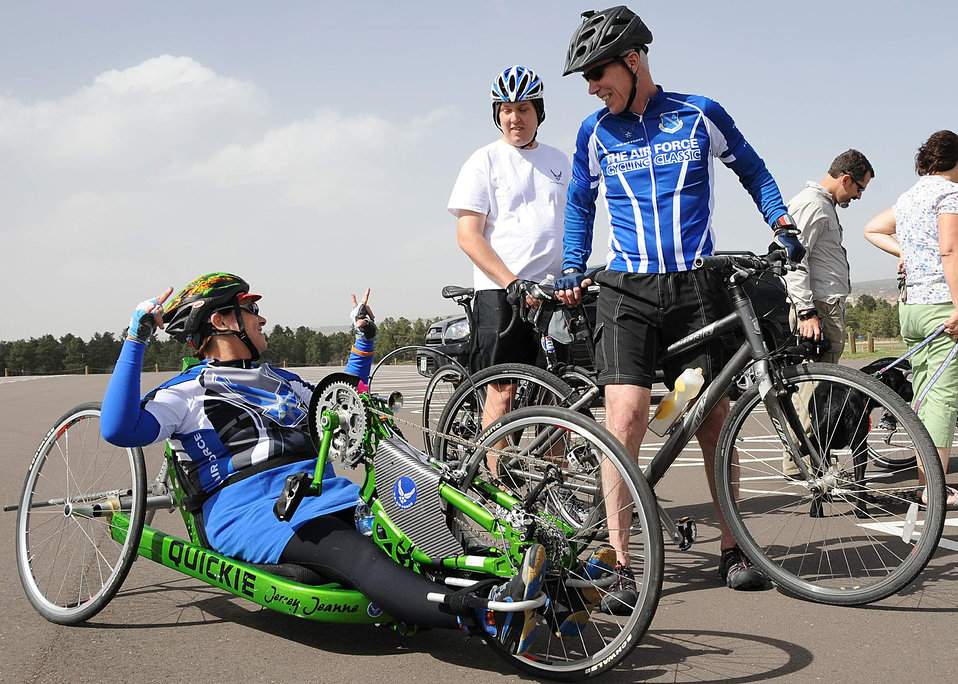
AFSPC commander welcomes AF Wounded Warriors, kicks off 2011 competition

Retired Staff Sgt. Jeanne Goldy-Sanitate talks with Gen. William Shelton and retired Staff Sgt. Gregory Miller moments after completing a six-mile cycling course May 8, 2011, at the Air Force Academy in Colorado Springs, Colo. General Shelton spoke with the team at their morning breakfast and then joined them for cycling practice in the afternoon. The 2011 Warrior Games opening ceremony is scheduled for May 16. Sergeant Goldy-Sanitate and Sergeant Miller are Air Force competitors in the 2011 Warrior Games, and General Shelton is the Air Force Space Command commander.